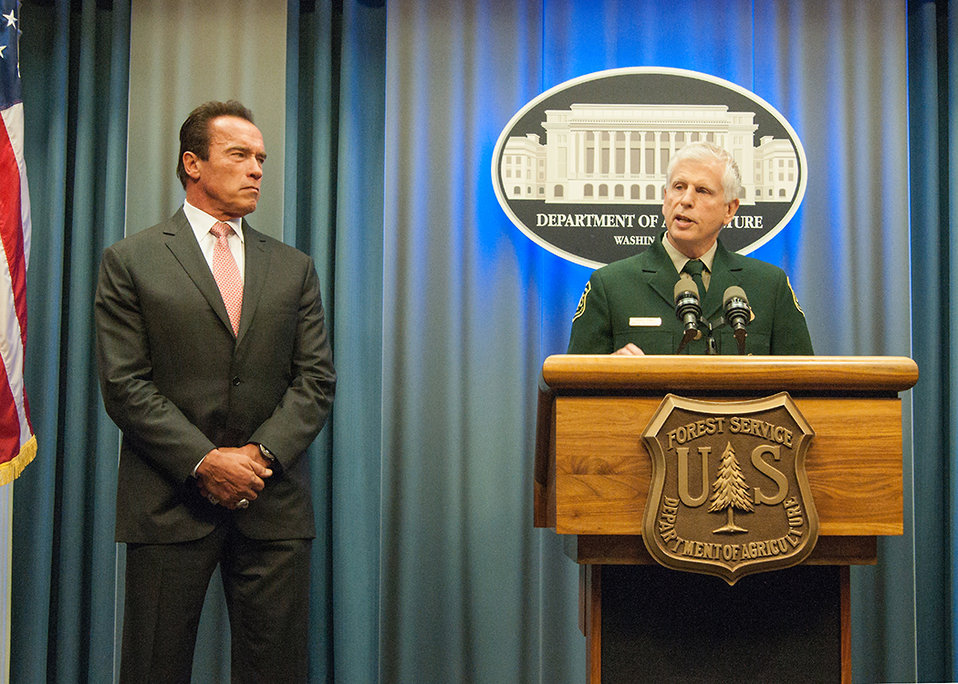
U.S. Forest Service Chief Tom Tidwell (right) named former California Governor Arnold Schwarzenegger (left) an honorary forest ranger for his leadership on climate change during a ceremony at the U.S. Department of Agriculture in Washington, D.C. Wed., Oct. 29, 2013. Governor Schwarzenegger the agency’s third honorary forest ranger joins actress Betty White and Rolling Stones keyboard player Chuck Leavell as honorary rangers.